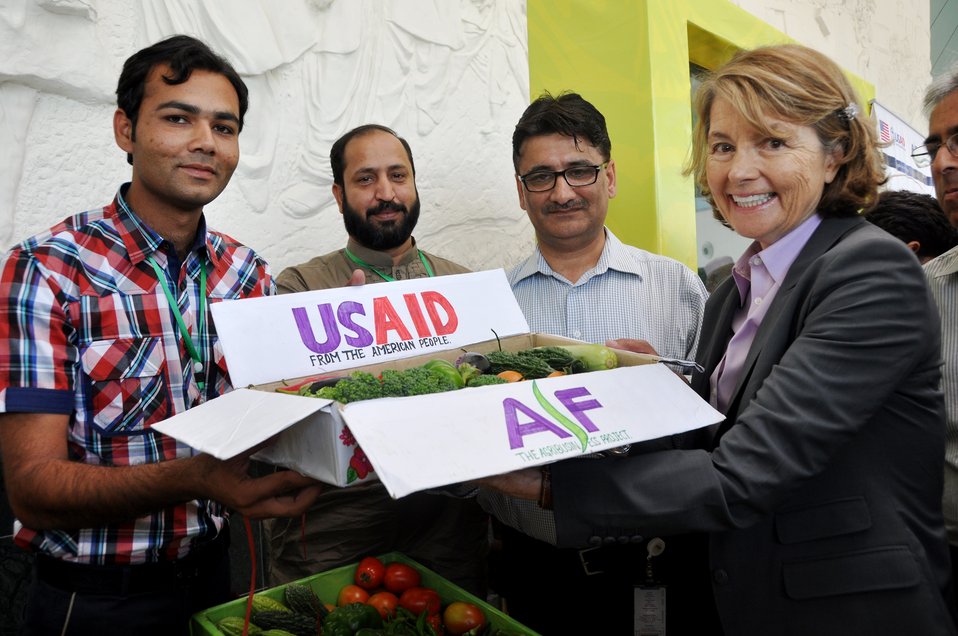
Pakistan Vegetable Fair 2014 (organized by USAID’s Agribusiness Project)

A farmer presenting a pack of fresh vegetables from his own Tunnel Farm in Punjab.